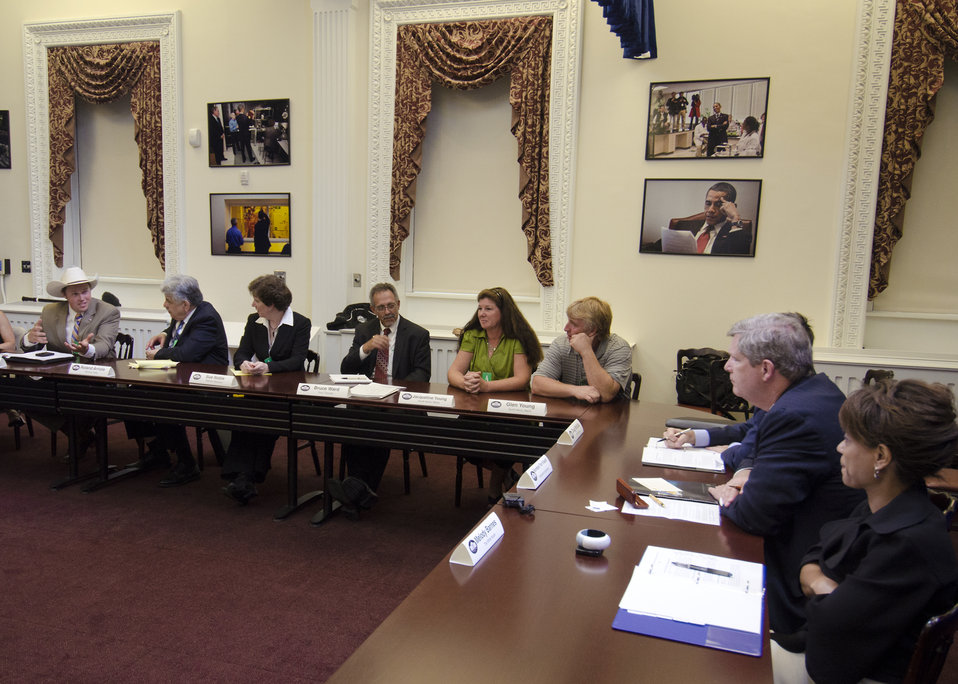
On Wednesday, Jul. 6, 2011, Agriculture Secretary Tom Vilsack attended a meeting at the White House in Washington, DC, with President Barack Obama, the President's Domestic Policy Adviser Melody Barnes and rural communities leaders from across the country for the White House Rural Champions of Change event. The purpose of this meeting is to strengthen rural communities and promote economic growth. Prior to coming here, they were posed with a question about, what should/should not the government be doing to strengthen rural communities and promote economic growth.